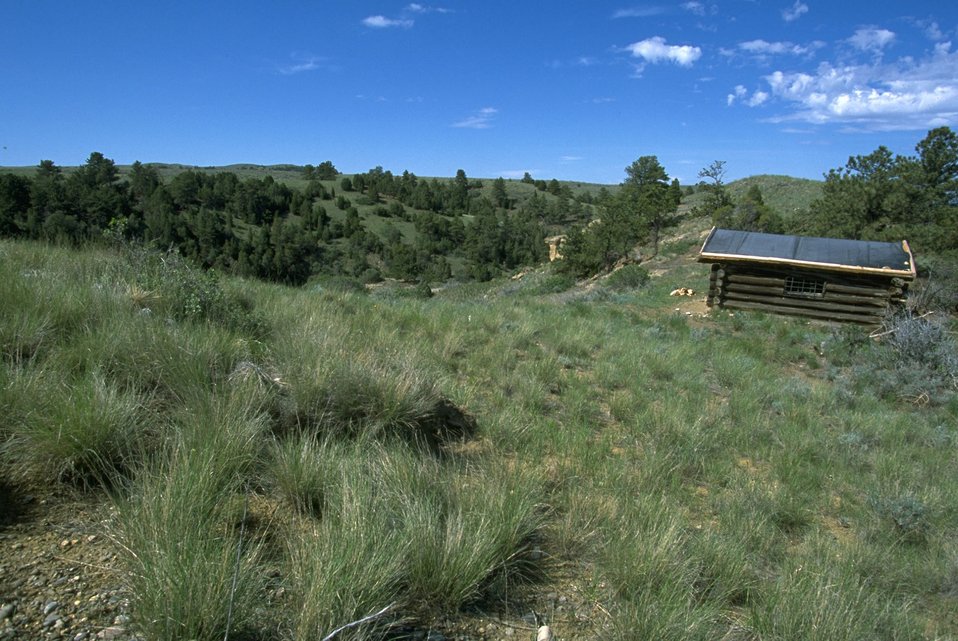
East side of the Will James Log Cabin and surrounding area in the Four Dances Natural Area